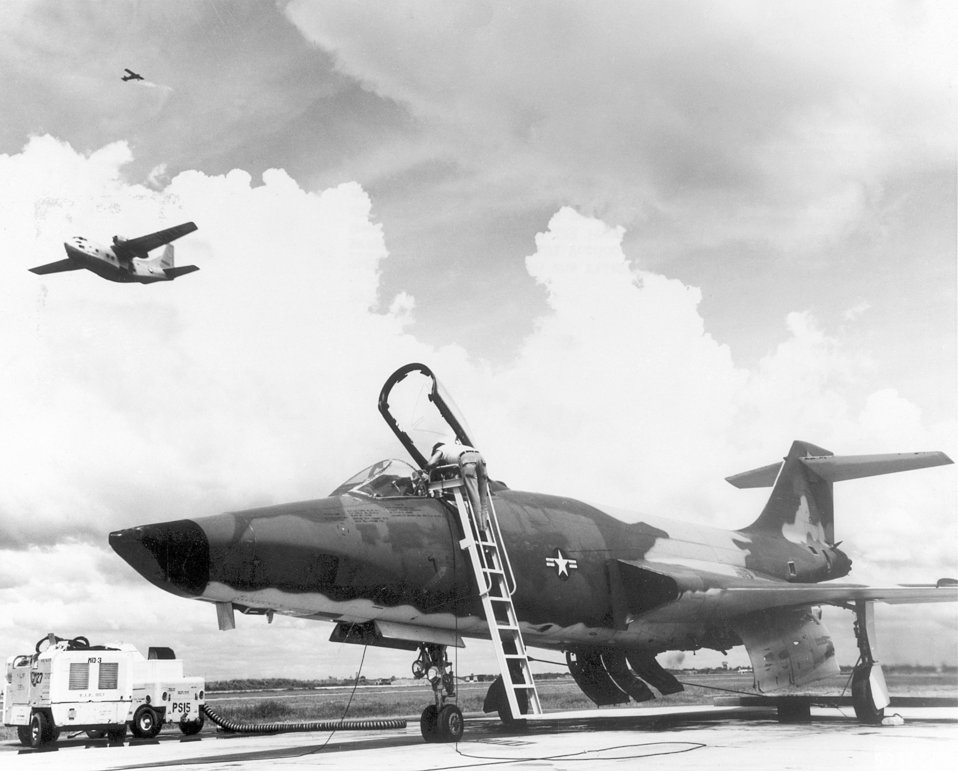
U.S. Air Force technicians prepare a McDonald RF-101 Voodoo

1960's -- On the flight line, U.S. Air Force technicians prepare a McDonald RF-101 Voodoo for a photo reconnaissance mission. Overhead, a Fairchild C-123 Provider takes off on another assault airlift sortie, providing an air bridge to an outpost in South Vietnam. High above, a Cessna O-1E